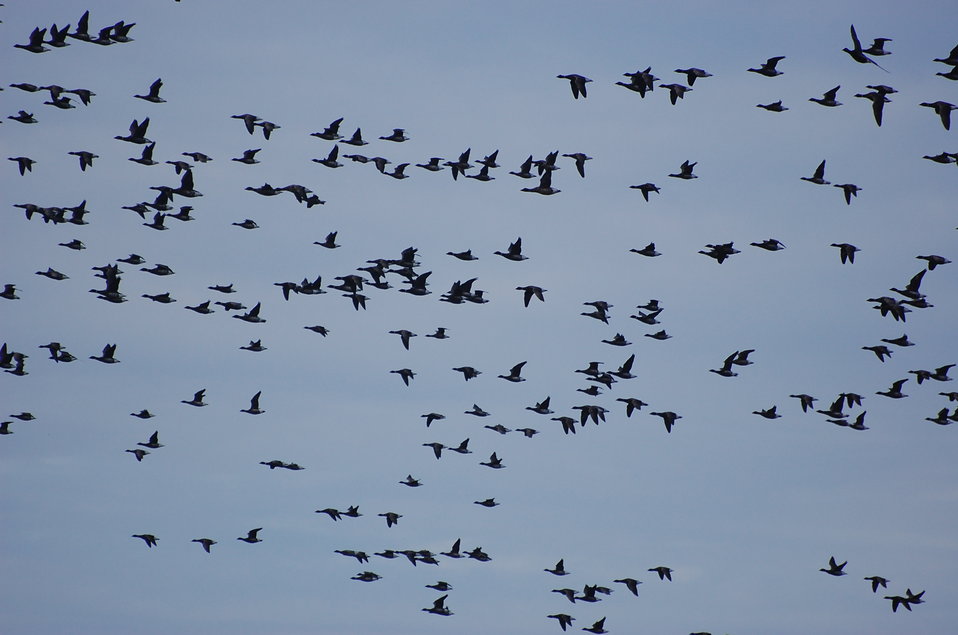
Brant at Izembek Lagoon, Izembek National Wildlife Refuge